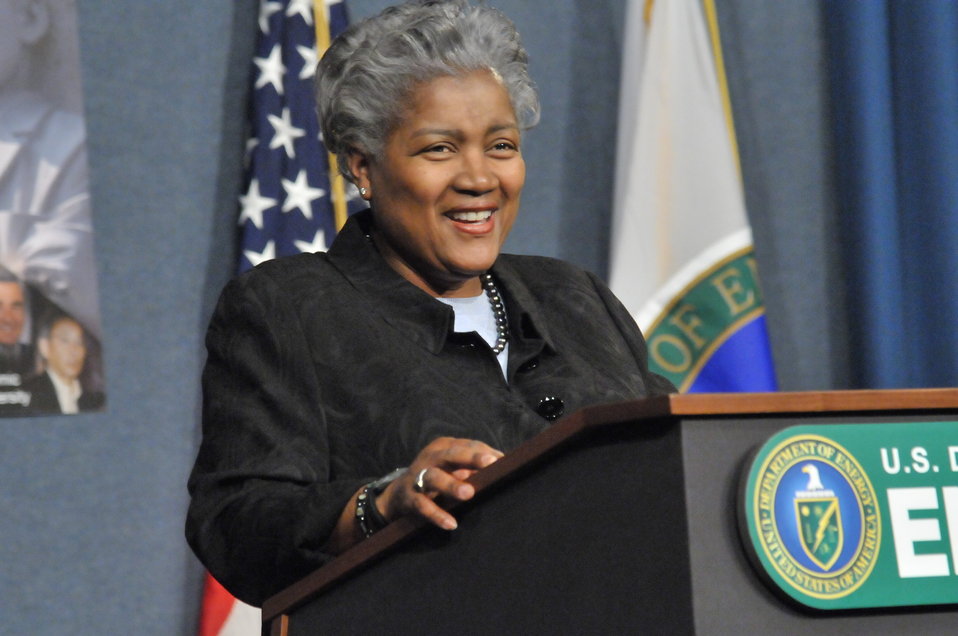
DEPARTMENT OF ENERGY -MARTIN LUTHER KING / BLACK HISTORY MONTH COMMEMORATIVE PROGRAM WITH DOE SECRETARY E. MONIZ IN ATTENDANCE